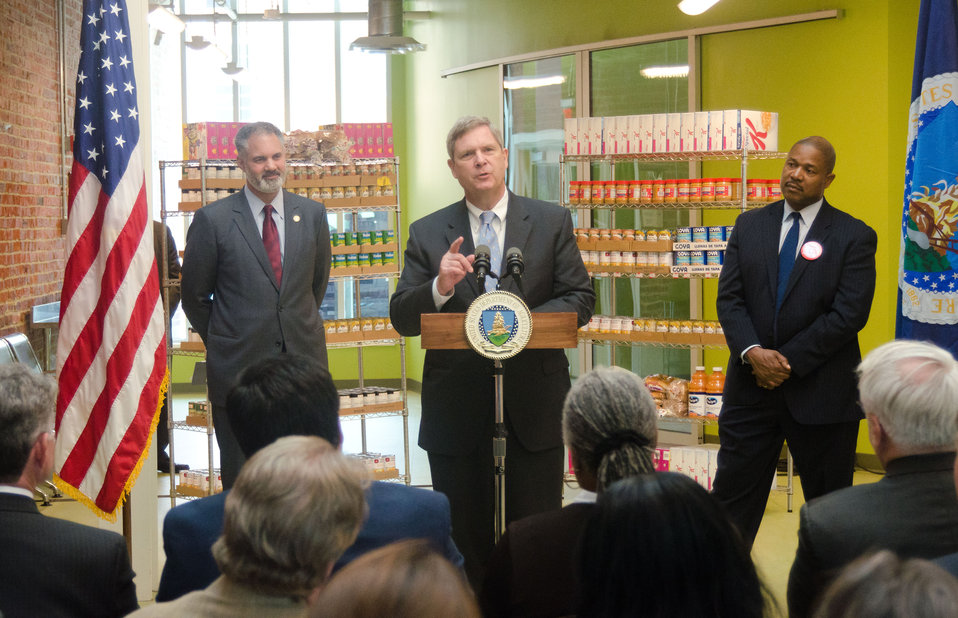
Agriculture Secretary Tom Vilsack (center), Corporation for National and Community Service CEO Patrick Corvington and Bread for the City President George Jones announced on Thursday April 29, 20ll in Washington, DC, each of their organization's are committed to ending childhood hunger. Secretary Vilsack presented USDA's resources to champion the end of hunger and create innovative partnerships to address hunger, especially among children. Vilsack announced that USDA has made available to individuals, groups and communities the tools and technical assistants to become champions themselves in ending childhood hunger. He shared the web address www.fns.usda.gov/ech, where people can participate in an online commitment for that cause and identified actions that can be taken. When a person registers as a Stakeholder, they, their group or community can be kept informed and have input about ending childhood hunger. A follow-on link to www.serve.gov can assist a person in finding volunteer opportunities in their area; register an unlisted program; share a story about a volunteer project or personal experience; and help get the word out about United We Serve.